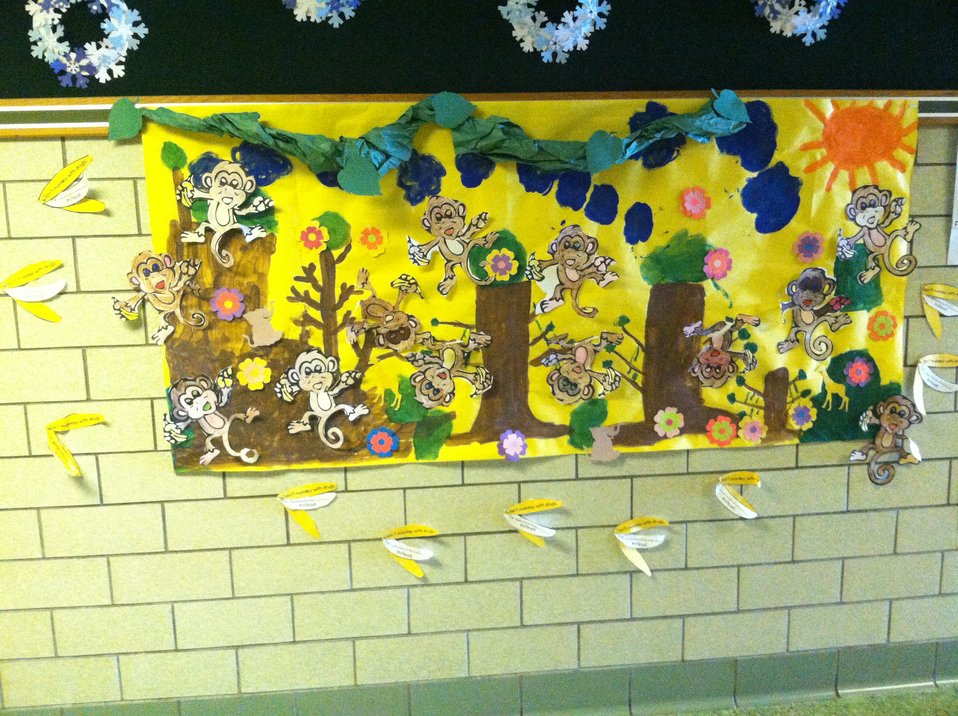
First Place Winner! NDFW 2013

Alverton, Penn., Southmoreland Primary Center held a 'Jungle-themed' poster contest during its NDFW 2013 events.